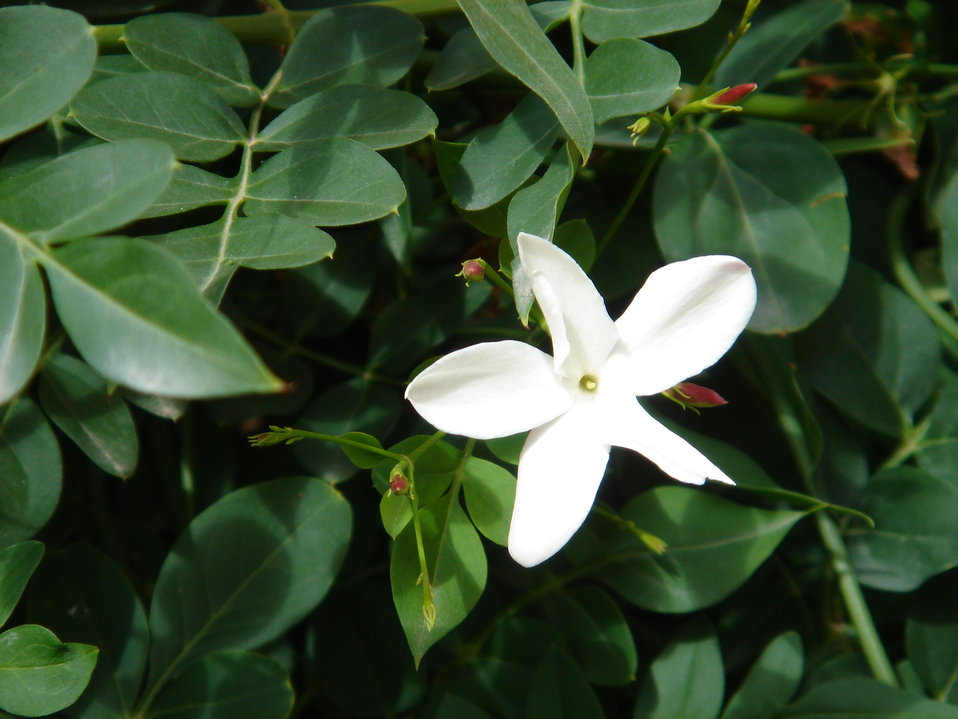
Jazmín limonero